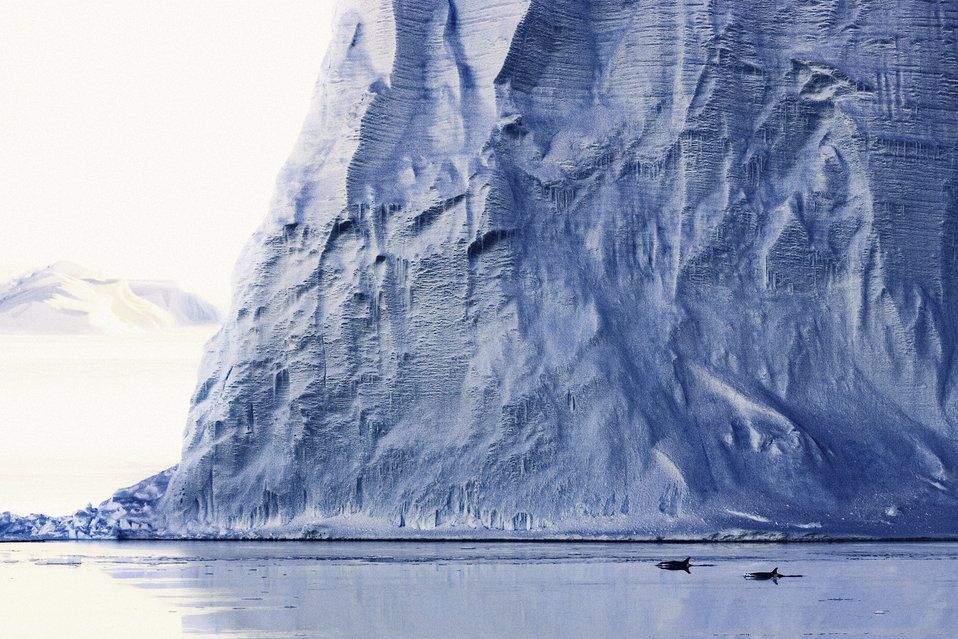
Pods of Killer Whales Patrol the Ice Edges

Pods of killer whales, sometimes 100 strong, patrol the ice edges. Three separate ecotypes live in the Ross Sea, each specializing in different diet. One of them may be a distinct species, which lives mainly in the Ross Sea, 2007. [John B. Weller photo, courtesy of The Pew Charitable Trusts]